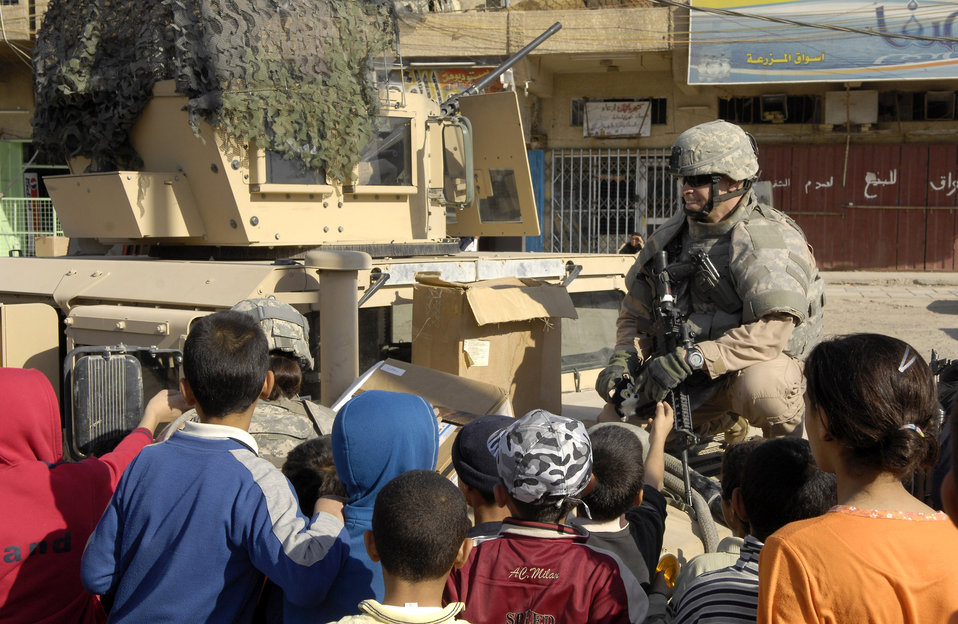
Toys for Iraqi tots

Tech. Sgt. Dustin Lord and Iraqi police officers hand out toys to local children Dec. 18 in Baghdad, Iraq, during a community relations outreach event. Security forces members from Det. 3 of the 732nd Expeditionary Security Forces Squadron, attached to the Army's 92nd Military Police Brigade, help train, mentor and coach the Iraqi police to help build a secure and independent Iraq.